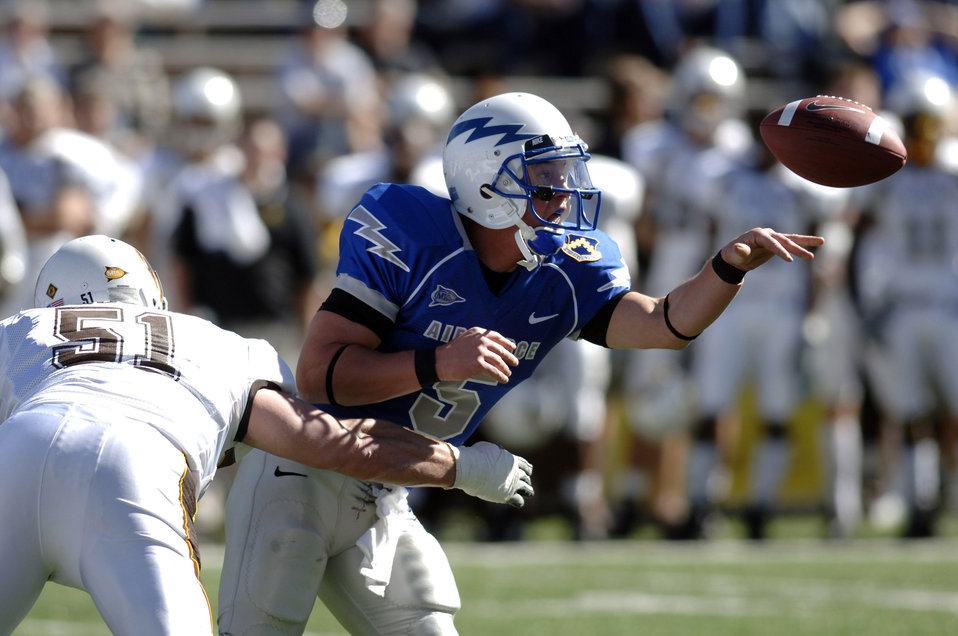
Football: Falcons bowl-eligible after win over Wyoming

U.S. Air Force Academy Falcons quarterback Shaun Carney pitches to a teammate before getting hit by Wyoming's Brandon Haugen during Air Force's 20-12 win Oct. 20 at Falcon Stadium in Colorado. Carney ran for 64 yards and passed for 52 more.